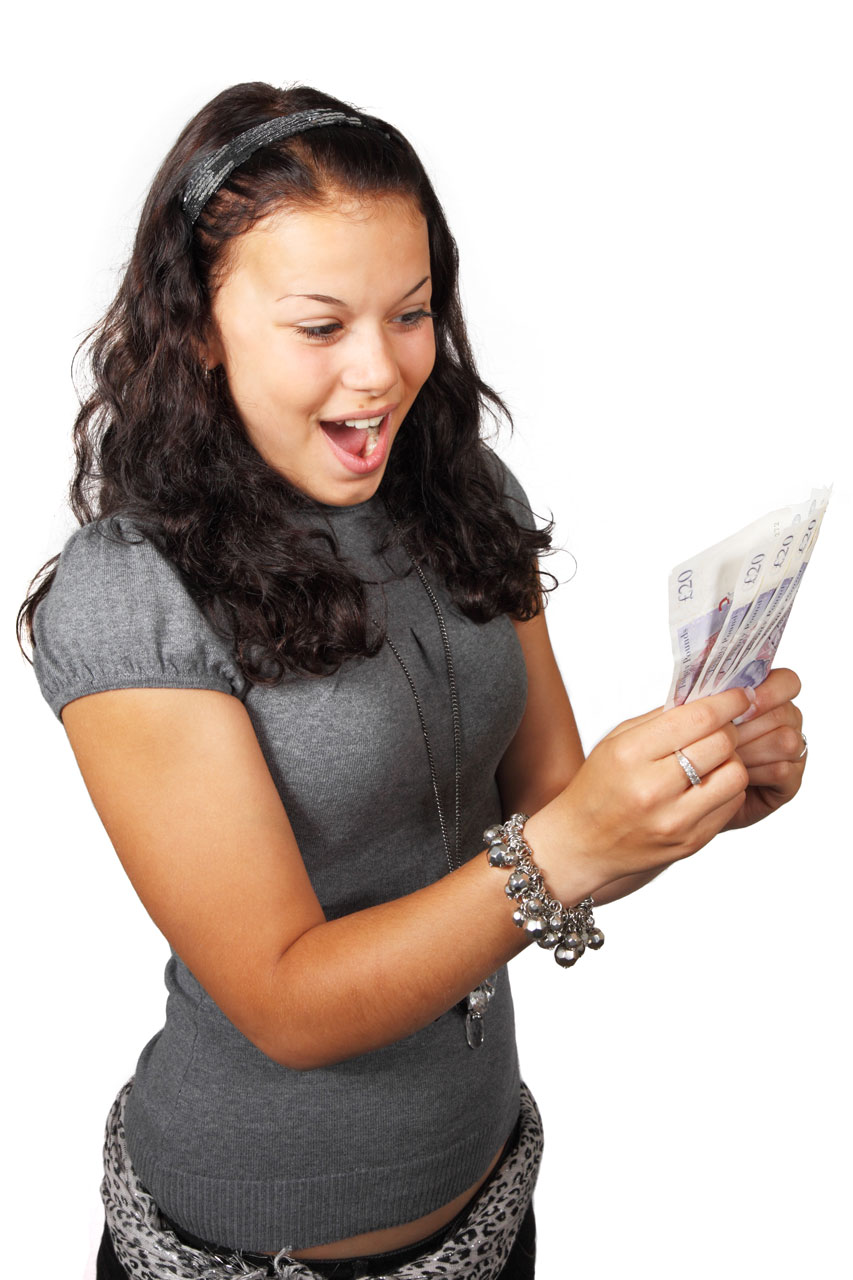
Winning money

Young woman has won a lot of money.